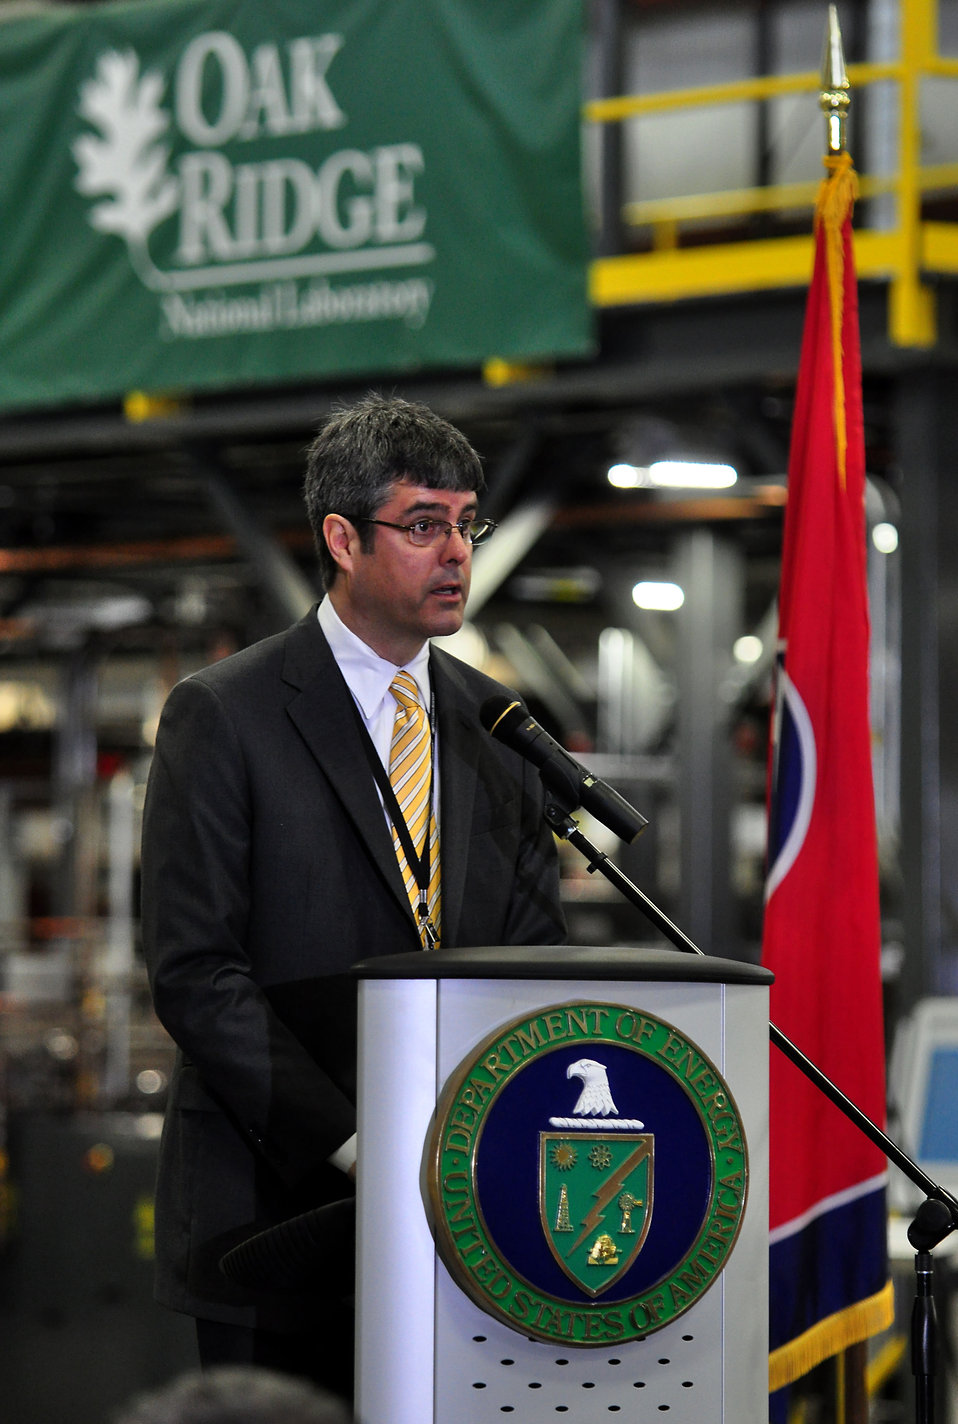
Carbon Fiber Technology Facilty Open House Oak Ridge Tennessee

13-025 DOE photo Lynn Freeny
Oak Ridge National Lab Director Thom Mason